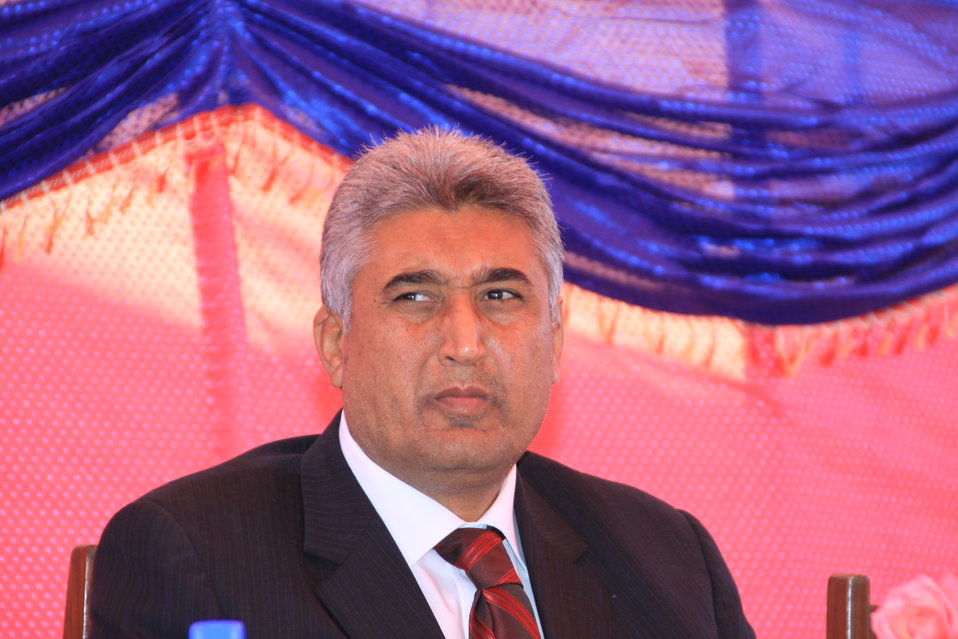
AVIPA Plus Wheat Seed Distribution 101005

US Ambassador Karl Eikenberry and USAID Acting Mission Director Kevin Brownawell joined the Minister of Agriculture, Irrigation and Livestock, H.E. Minister Mohammed Rahimi in signing a Memorandum of Understanding and distributing vouchers to area farmers for wheat and fertilizer.

US Ambassador Karl Eikenberry and USAID Acting Mission Director Kevin Brownawell joined the Minister of Agriculture, Irrigation and Livestock, H.E. Minister Mohammed Rahimi in signing a Memorandum of Understanding and distributing vouchers to area farmers for wheat and fertilizer.